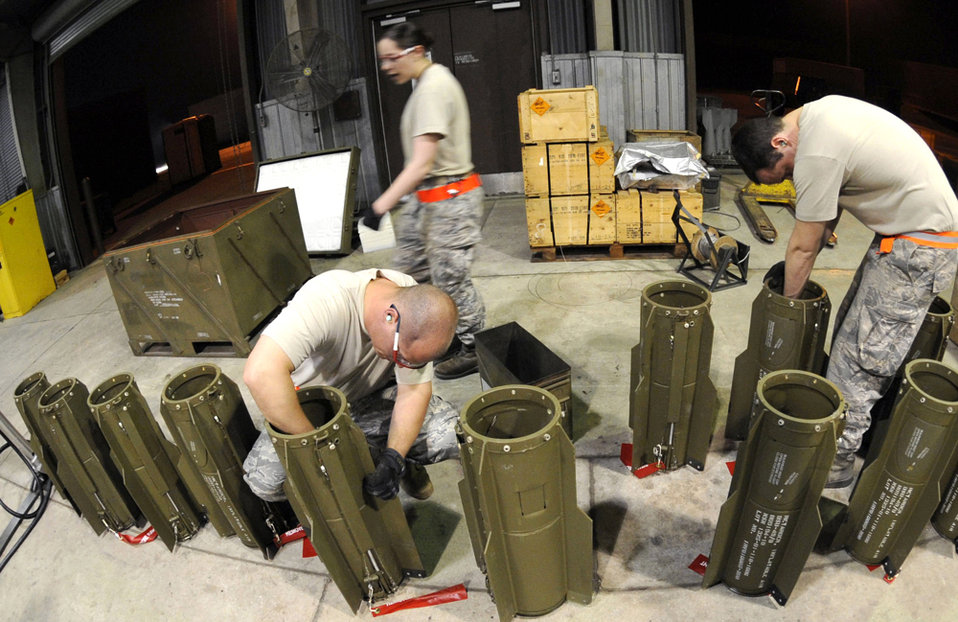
Osan Airmen host munitions exercise

Staff Sgts. Brandon Jones and Wesley Cummins prepare BSU-49 fin kits before installing them on bomb bodies during the Combat Ammunitions Production Exercise May 25, 2010, at Osan Air Base, South Korea. Sergeants Jones and Cummins are munitions maintainers from the 51st Munitions Squadron. CAPEX is a non-rated exercise held once a year in the Pacific Air Forces region.